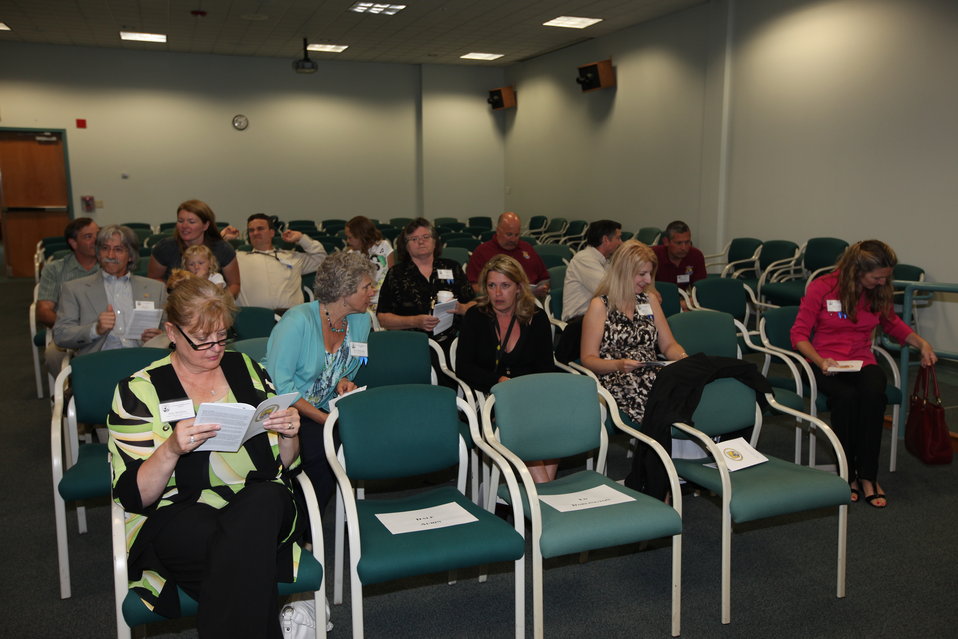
Northeast Region Employee Appreciation Awards